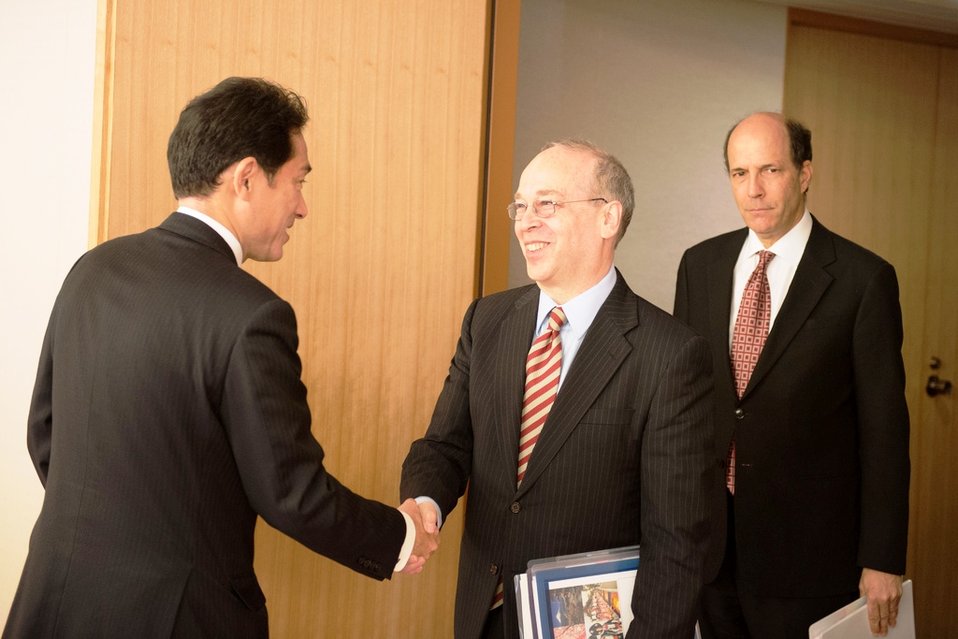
National Security Council Senior Director and Ambassador Roos Are Greeted By Japanese Foreign Minister Kishida

National Security Council Senior Director for Asian Affairs Daniel Russel and U.S. Ambassador to Japan John V. Roos are greeted by Japanese Foreign Minister Fumio Kishida before their meeting at the Ministry of Foreign Affairs in Tokyo, Japan, January 17, 2013.